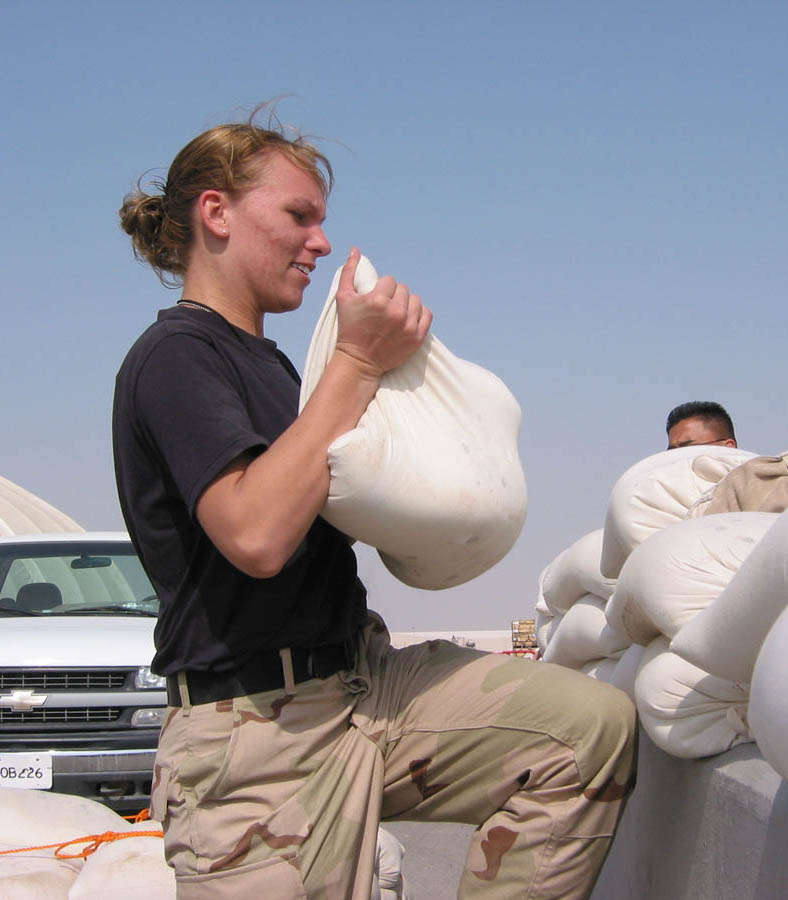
In the bag

OPERATION ENDURING FREEDOM -- Senior Airman Heather Anthony lifts one of many sandbags to help secure liners of the fuel farm at a forward-deployed location. Anthony and co-workers from the 380th Expeditionary Logistics Readiness Squadron's petroleum, oil and lubricants section were joined by base volunteers for the fuel farm expansion project.